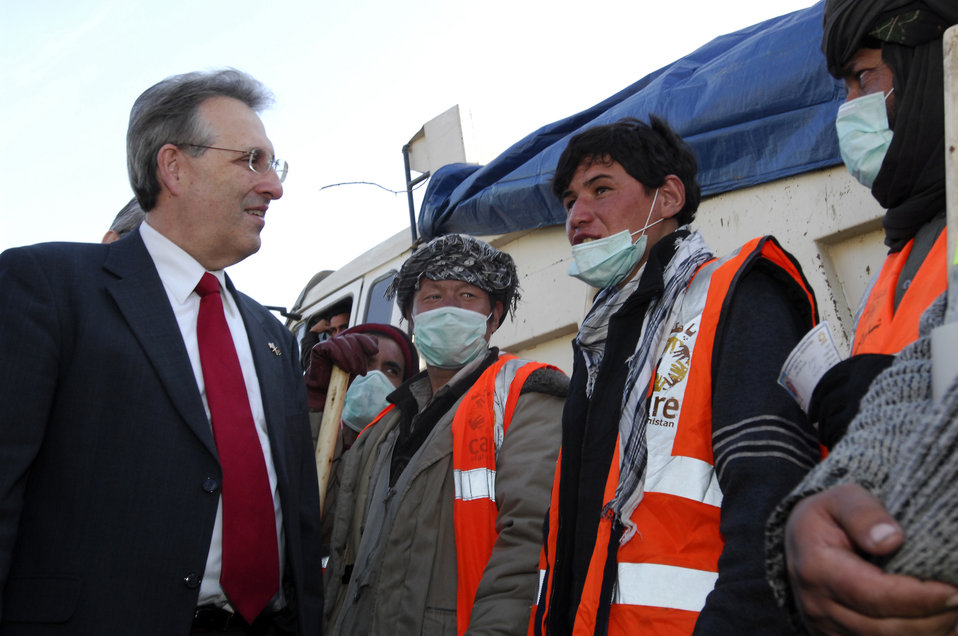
Care95